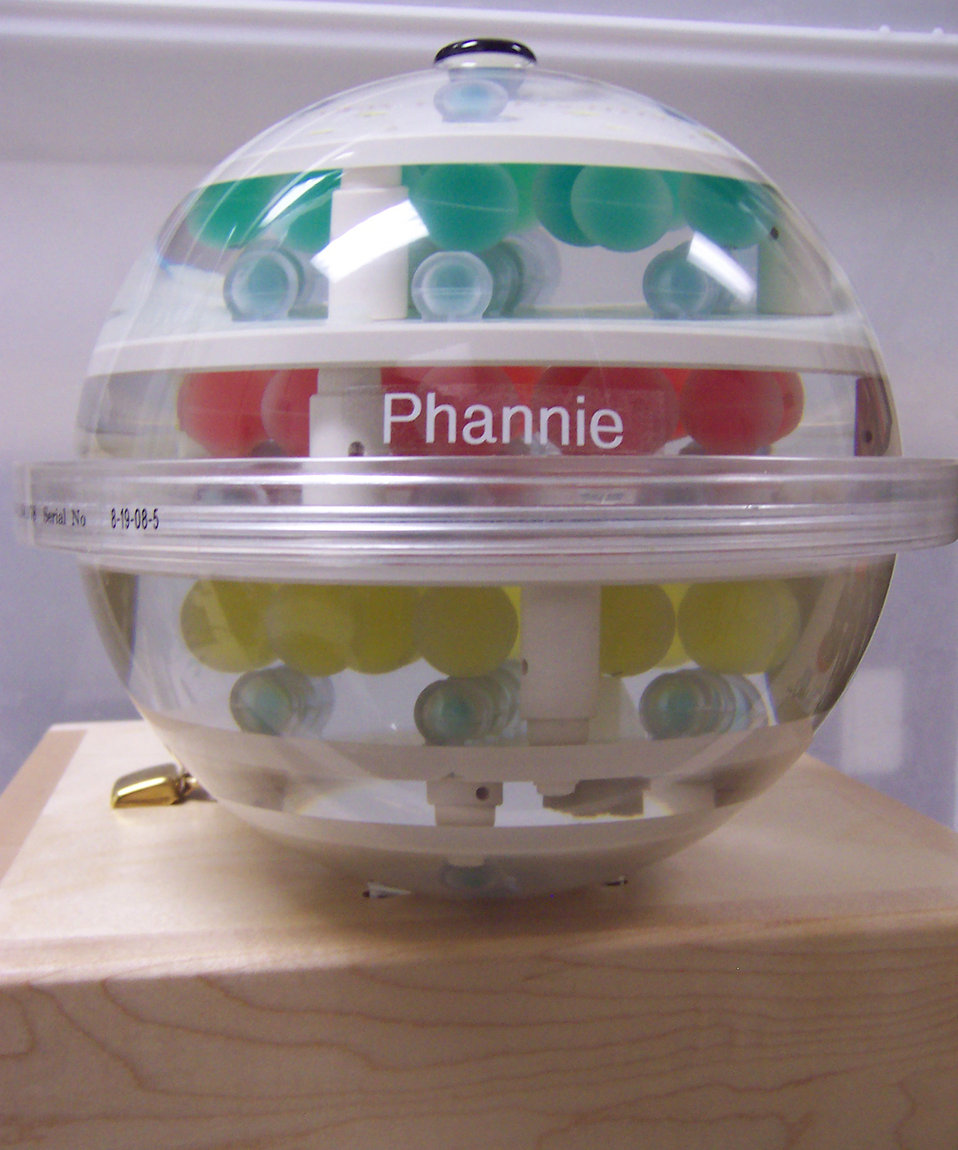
MRI

Phannie is the first 'phantom' for calibrating magnetic resonance imaging (MRI) machines that is traceable to standardized values. The plastic sphere is about the size of a person's head and filled with 100 smaller spheres used as contrast-enhancing agents and measurement reference markers. NIST researchers in Boulder, Colo., built Phannie and tested it on an MRI scanner at the University of Colorado Brain Imaging Center.